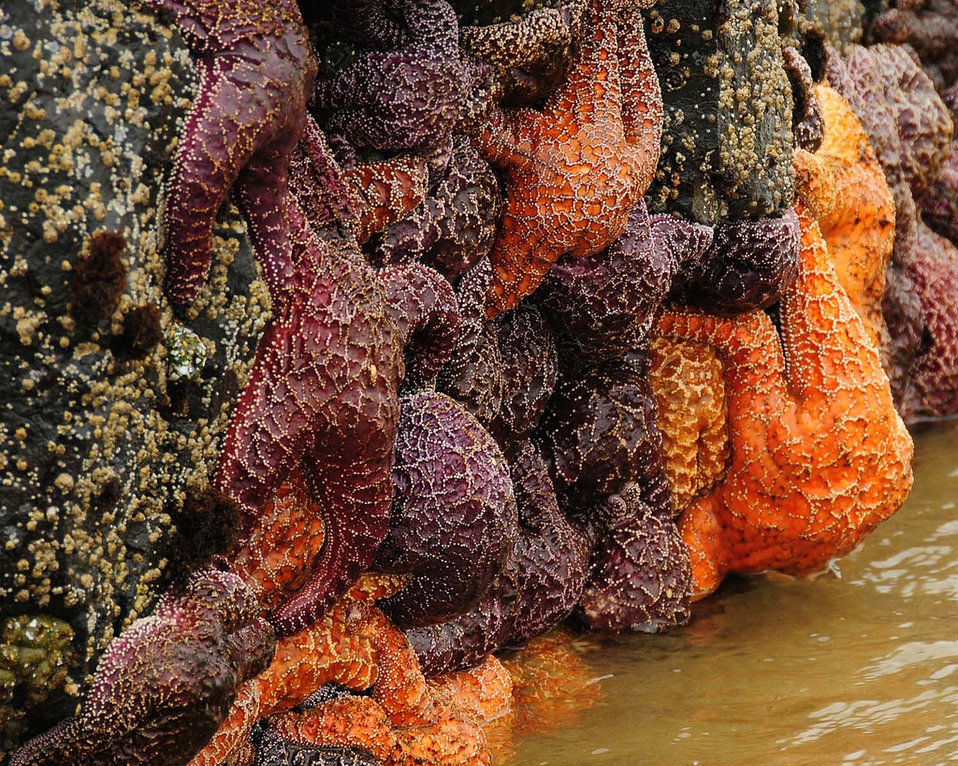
Sea stars (starfish) on Oregon Islands National Wildlife Refuge, OR
Sea stars are rainbow-colored predators that feed on bivalves, such as oysters, mussels and clams, and fish.